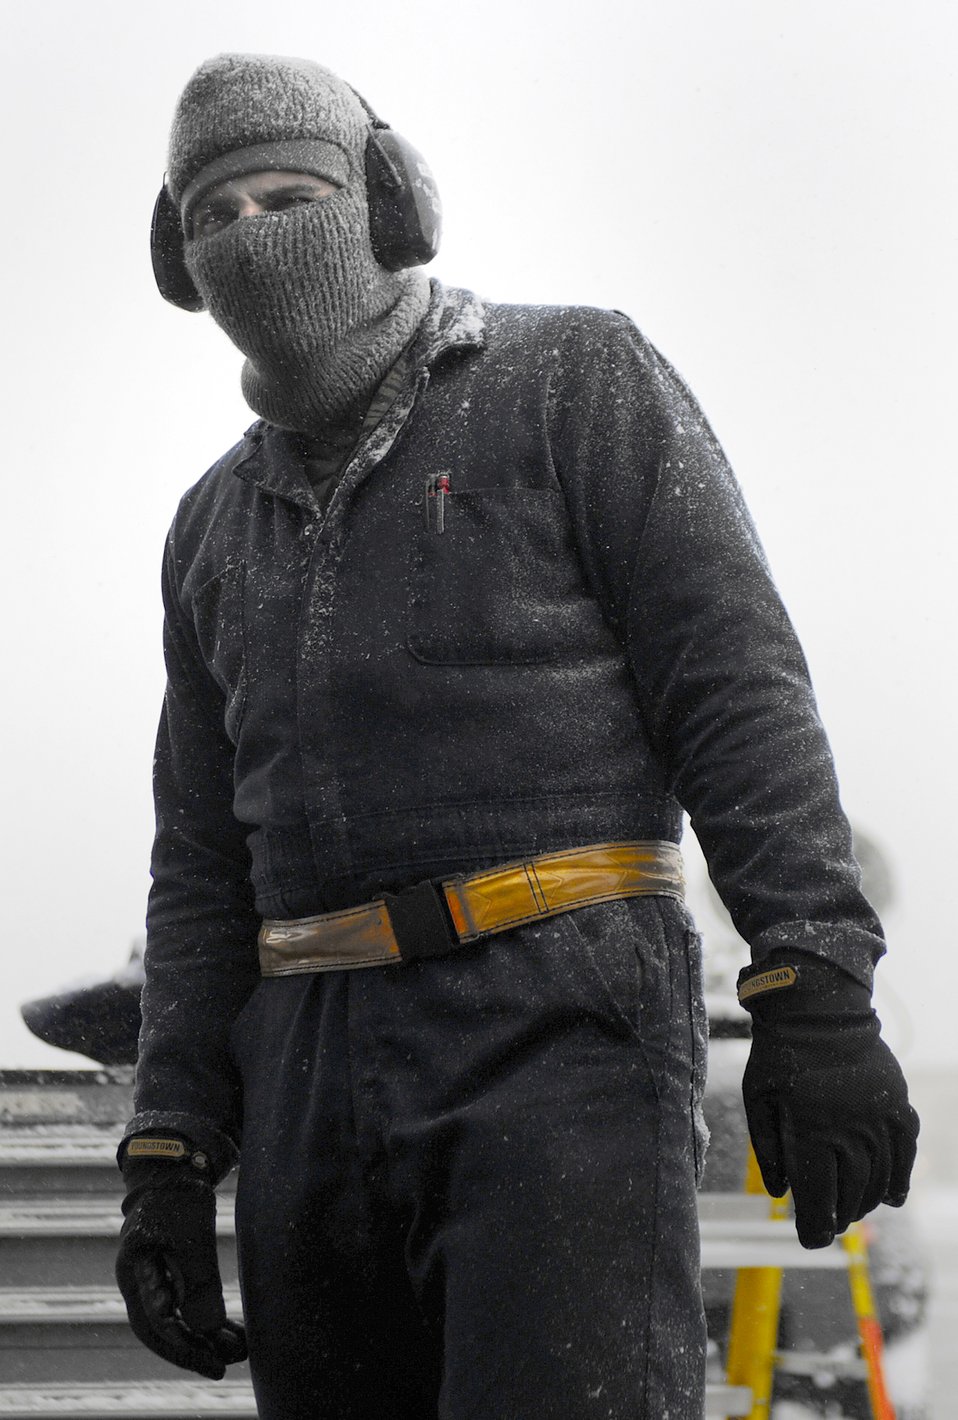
Airmen work under harsh weather conditions

Airman 1st Class James Horton works under harsh weather conditions during an exercise Nov. 21, 2010, on the flightline at Mountain Home Air Force Base, Idaho. Wing officials use operational readiness exercises to gauge the wing's ability to meet wartime taskings at a deployed location. The evaluation includes initial response, readiness, combat operations, ability to survive and operate, self aid and buddy care, and mission support. Airman Horton is assigned to the 391st Fighter Squadron as a crew chief.